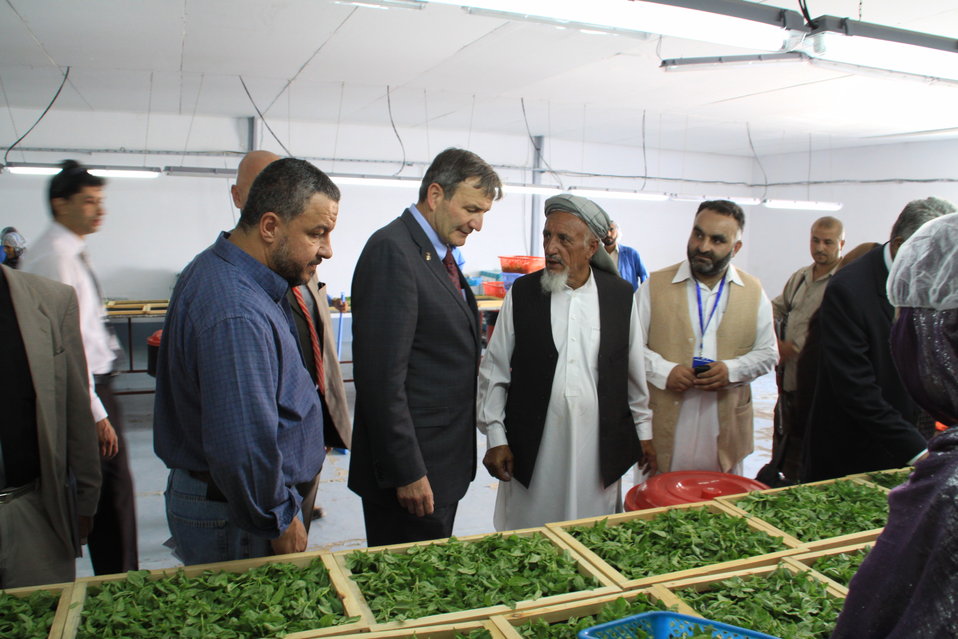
Badam Bagh Farm